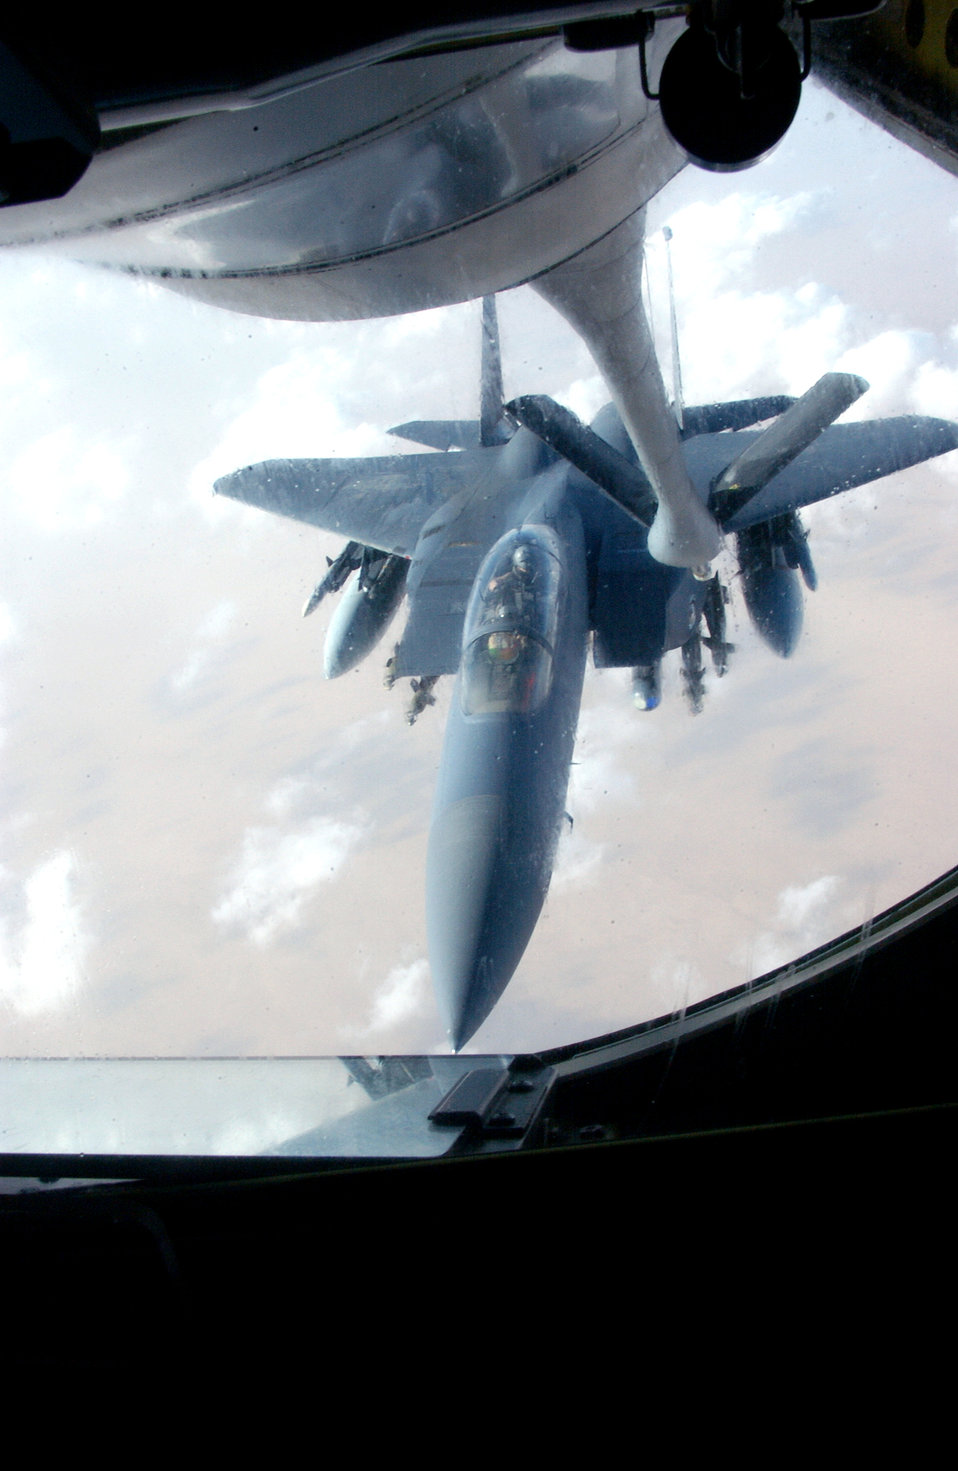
Boom operators provide fuel for warfighters

OVER IRAQ -- An F-15 Eagle lines up to receive fuel from a KC-135 Stratotanker during a combat mission supporting Operation Iraqi Freedom.